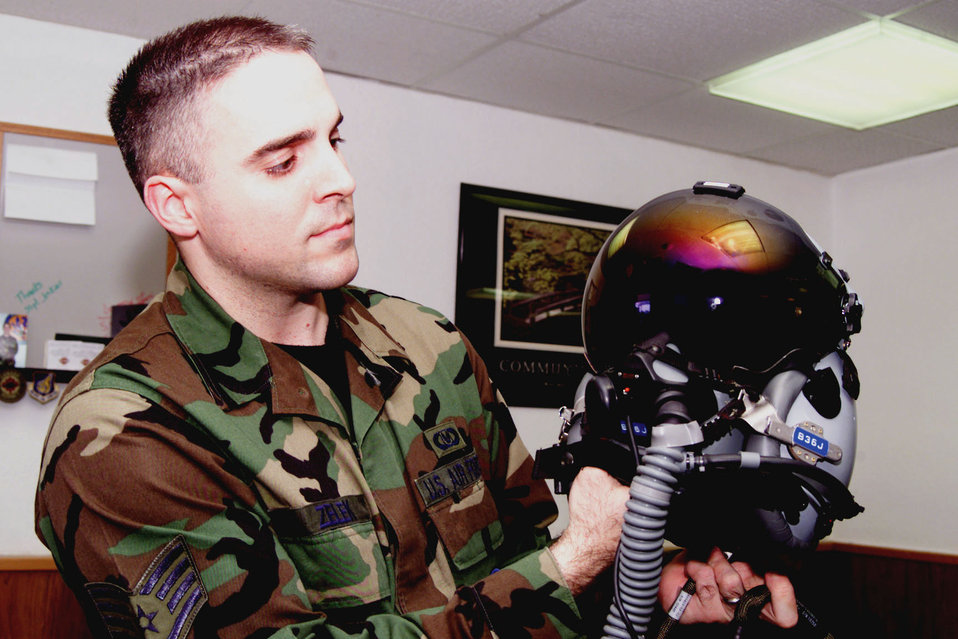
Helmet upgrades enhance air power

SPANGDAHLEM AIR BASE, Germany -- Staff Sgt. Terence Zelek holds the Joint Helmet-Mounted Cueing System that is now used in 52nd Fighter Wing's F-16 Fighting Falcons here. The new system puts critical data less than three inches from a pilot's right eye. Sergeant Zelek is a life-support technician with the 23rd Fighter Squadron.